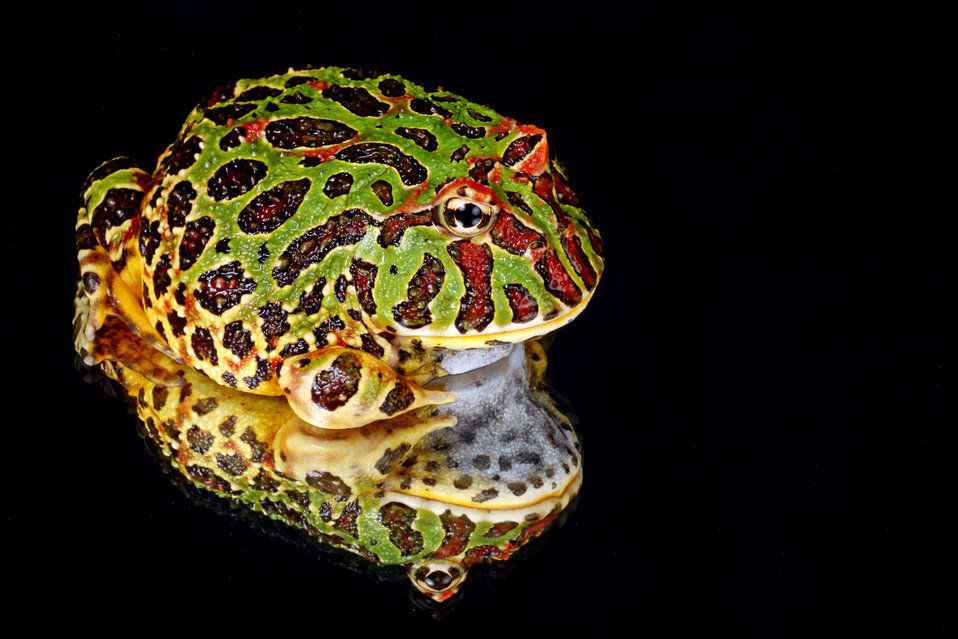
Frog reflection macro

Close-up macro of a ornate horned frog reflected.